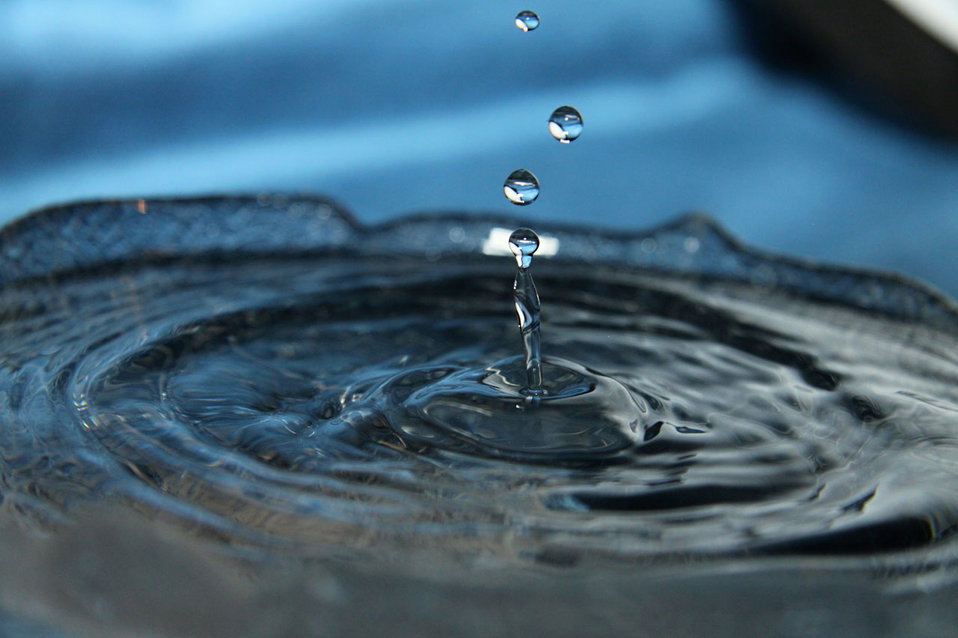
Drop of water.